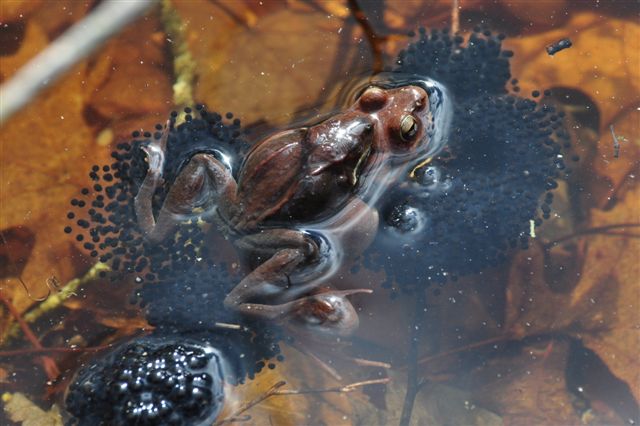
Photo of the Week - Wood Frog and eggs (RI)

Photo of the Week - 4/16/2012

Wood frog laying eggs in Kettle Pond vernal pool at Ninigret National Wildlife Refuge.